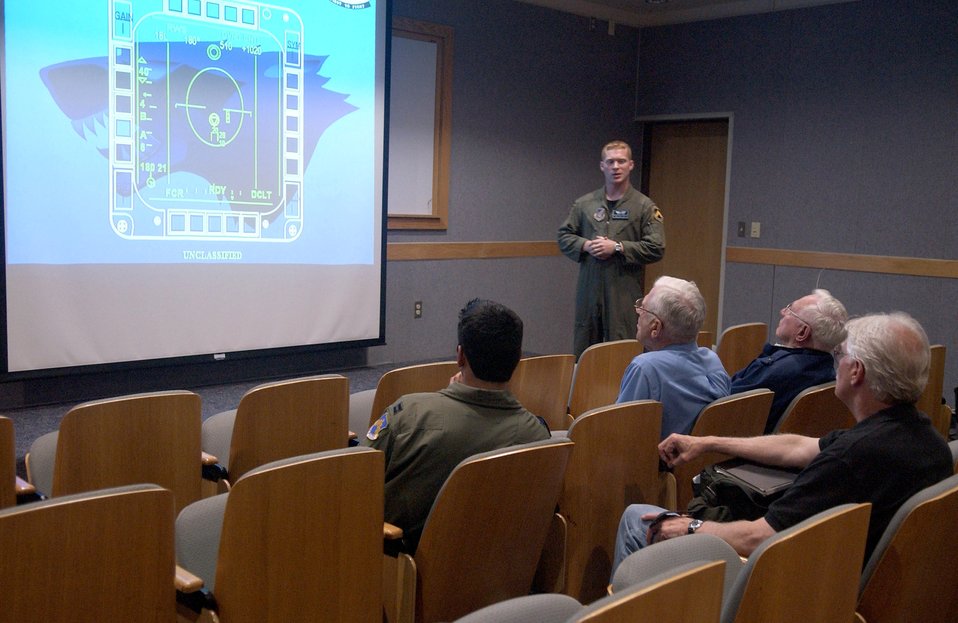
American pilots of yesteryear visit Kunsan, rekindle Korean War memories

Capt. Pat Kennedy briefs four visiting Korean War veterans Sept. 11 on flying sortie operations at Kunsan Air Base, South Korea. The veterans were visiting Kunsan and sharing their flying experiences with 8th Fighter Wing Airmen. Captain Kennedy is with the 35th Fighter Squadron.